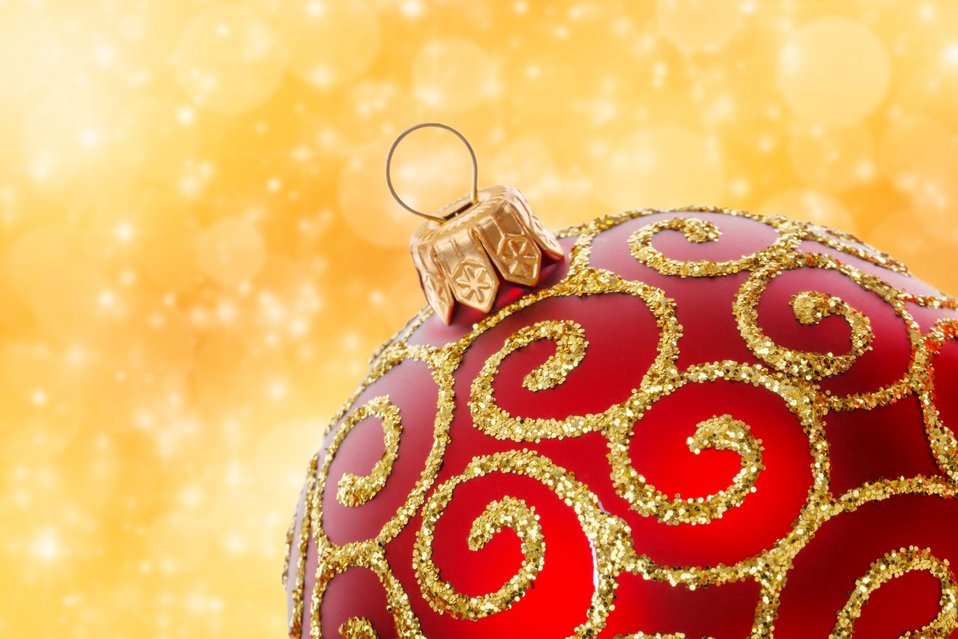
Red christmas ball on golden background.